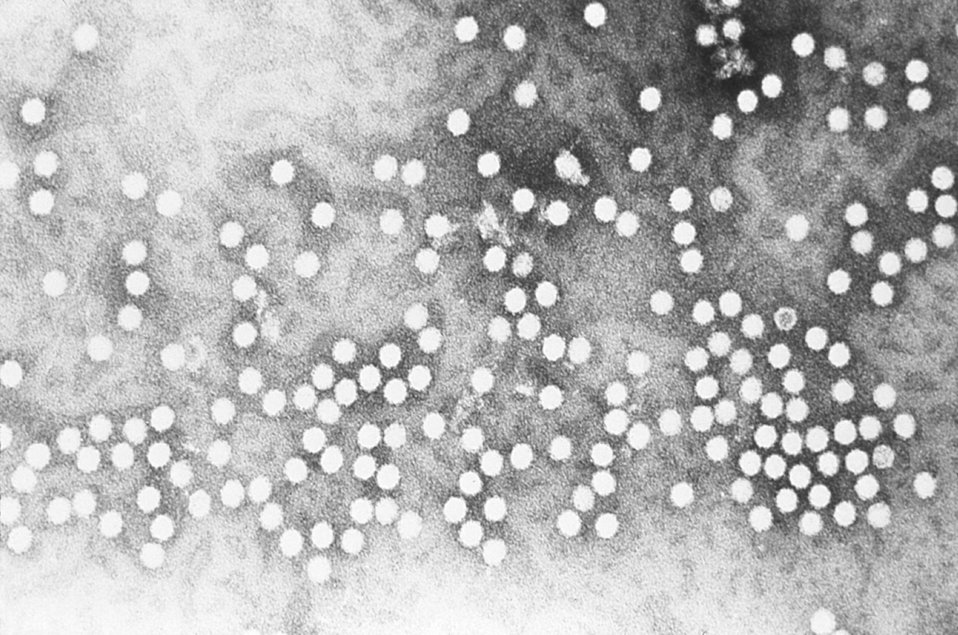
This electron micrograph depicts a number of parvovirus H-1 virions of the Parvoviridae family of DNA viruses.